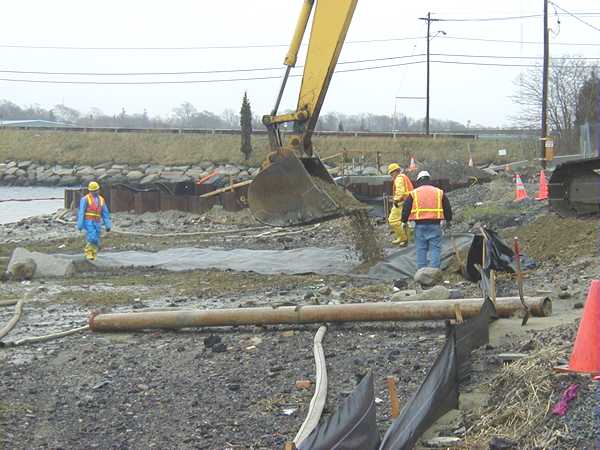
Spring 2001, Relocation of a combined sewer overflow

To make way for the cleanup process, EPA took on a host of other shoreline imrpovement projects to make room for the processing, storage and treatment facilities. These areas will ultimately be turned back over to the City of New Bedford when the Harbor cleanup is complete.